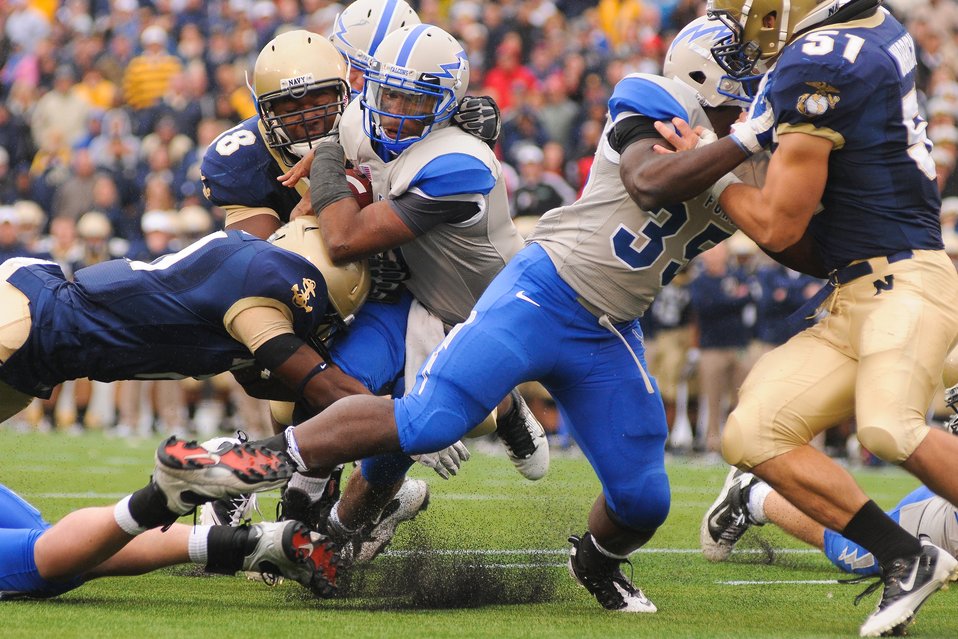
What a rush

Air Force Academy quarterback Tim Jefferson rushes towards the end zone Oct. 1, 2011, during overtime of the Academy's 35-34 win over Navy at the U.S. Naval Academy.